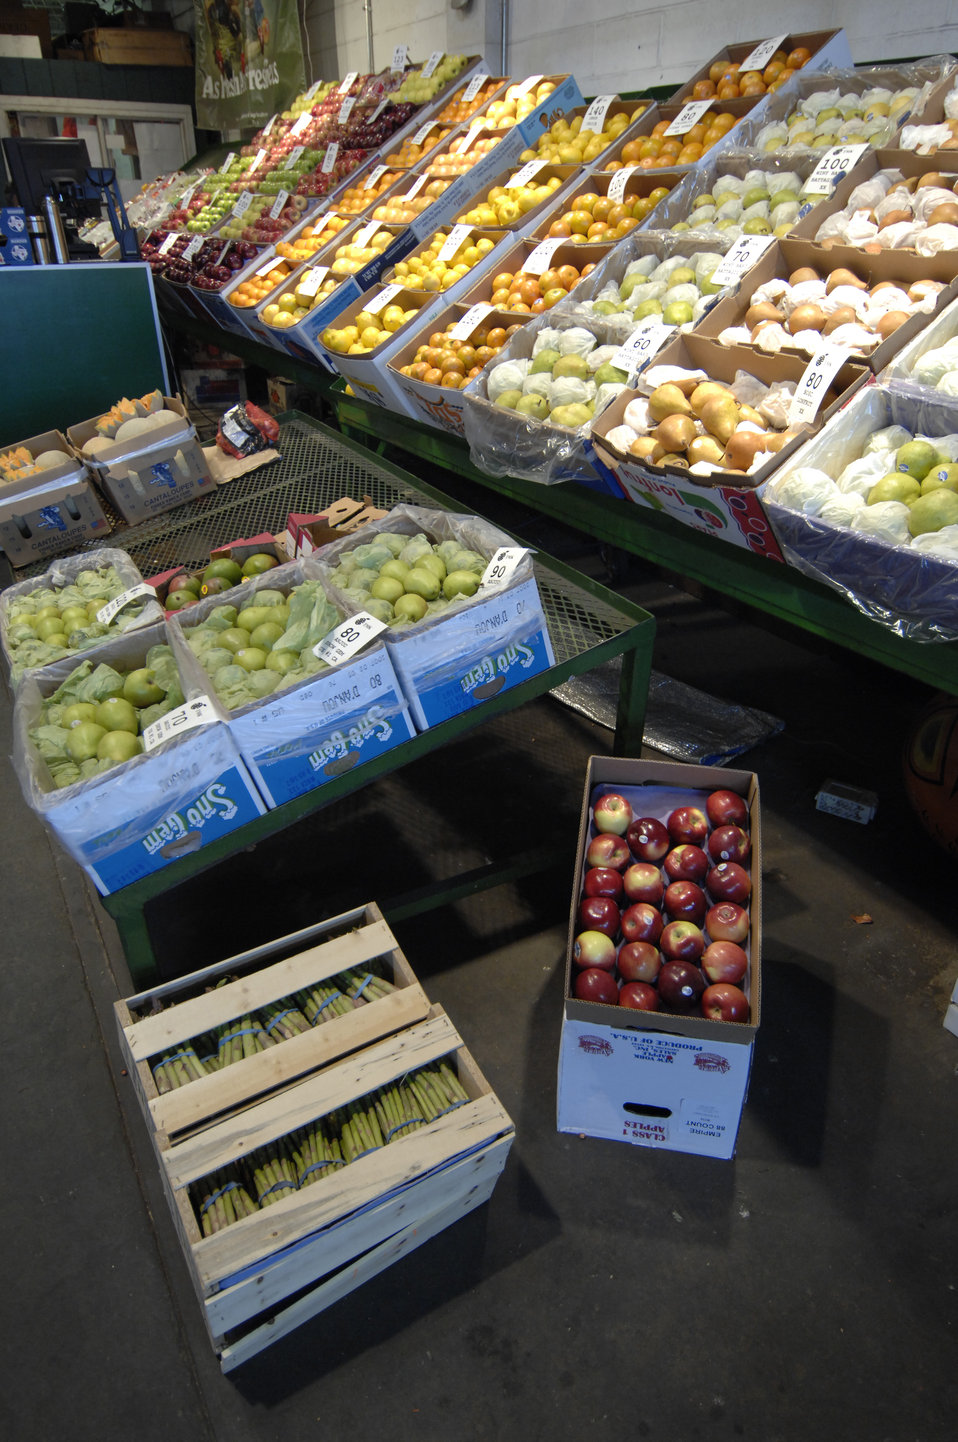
Fresh produce is delivered daily to the Philadelphia Regional Produce Market in Philadelphia, Pennsylvania on May 20, 2008. The original Philadelphia Regional Produce Market opened its doors in 1959 bringing dozens of competitive wholesale produce merchants together at a central location that offered easy access for customers from across the area.